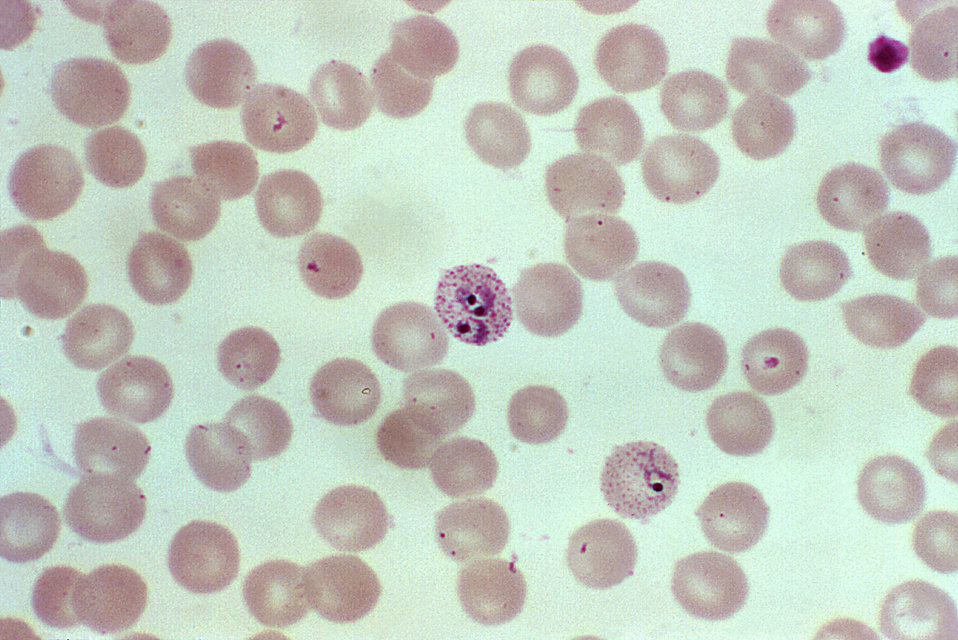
This photomicrograph shows a red blood cell that is doubly infected by Plasmodium vivax during the ring stage.